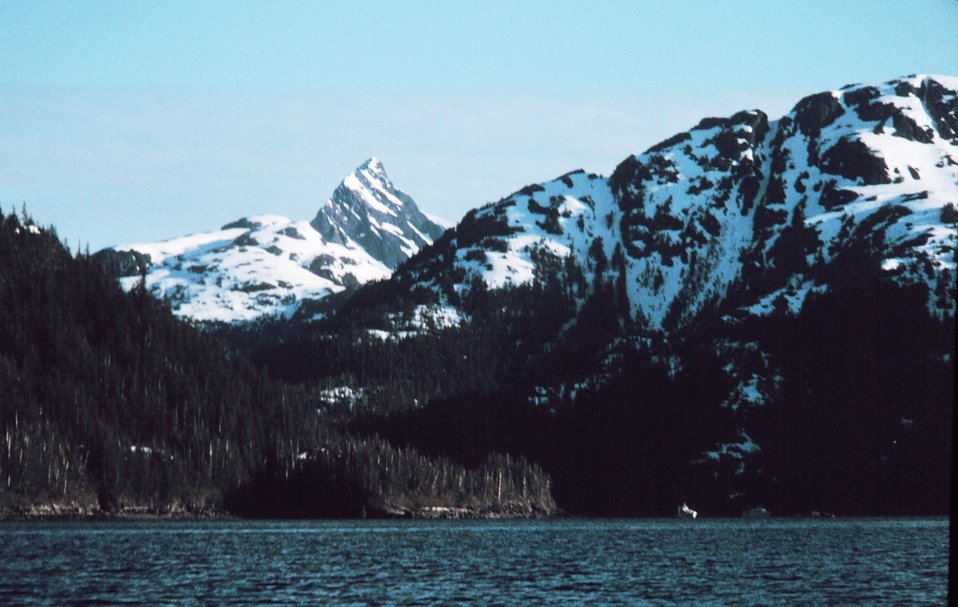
Prince William Sound